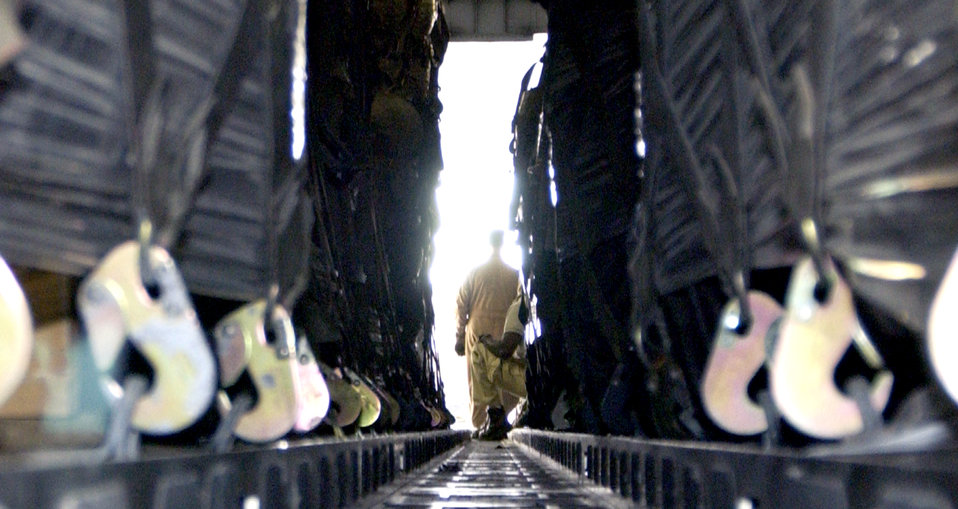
C-17 Globemaster III crew doing its part

Eighteen pallets of tires await transport to Balad Air Base, Iraq, on Aug. 5 aboard a C-17 Globemaster III with the 816 Expeditionary Airlift Squadron in Southwest Asia.